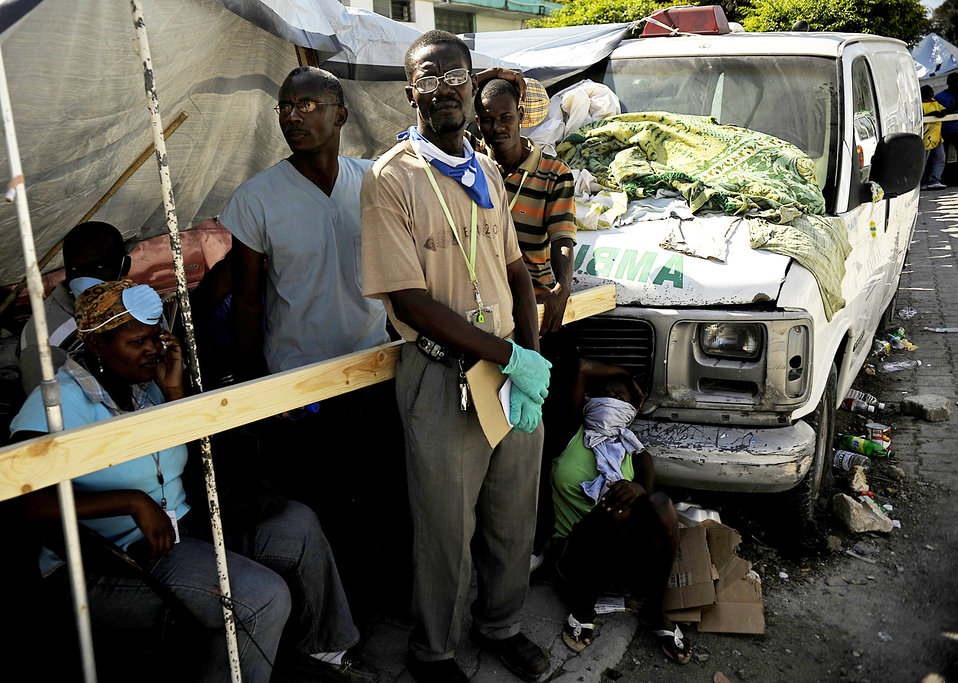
Relief efforts in Haiti

Workers at the General Hospital in Port-au-Prince, Haiti, gather outside to see former U.S. President Bill Clinton while he visits Jan. 18, 2010.